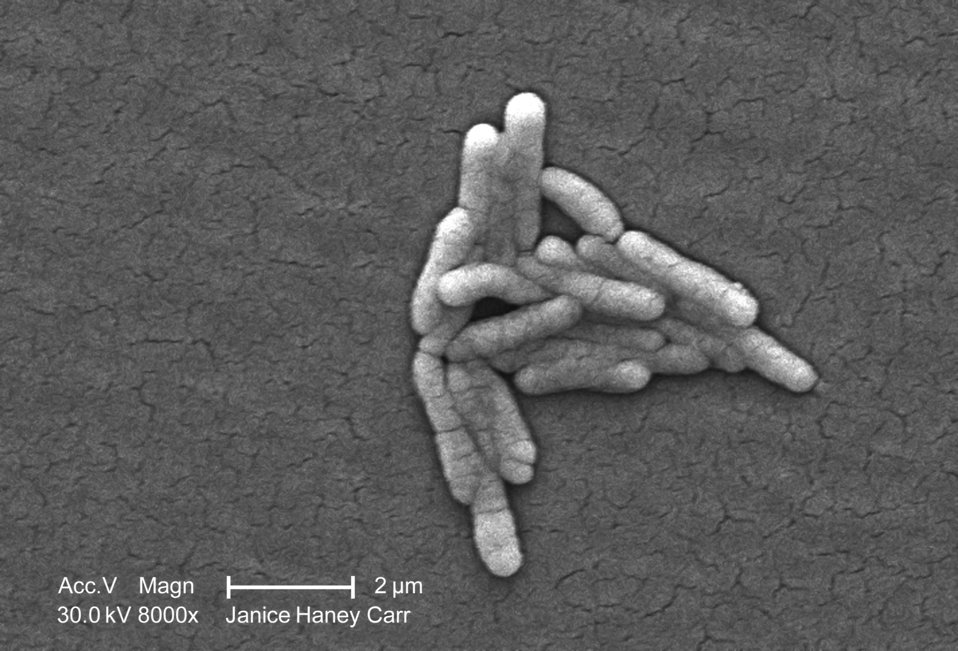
Under a moderately-high magnification of 8000X, this scanning electron micrograph (SEM) revealed the presence of a small grouping of Gram-negative Salmonella typhimurium bacteria that had been isolated from a pure culture.